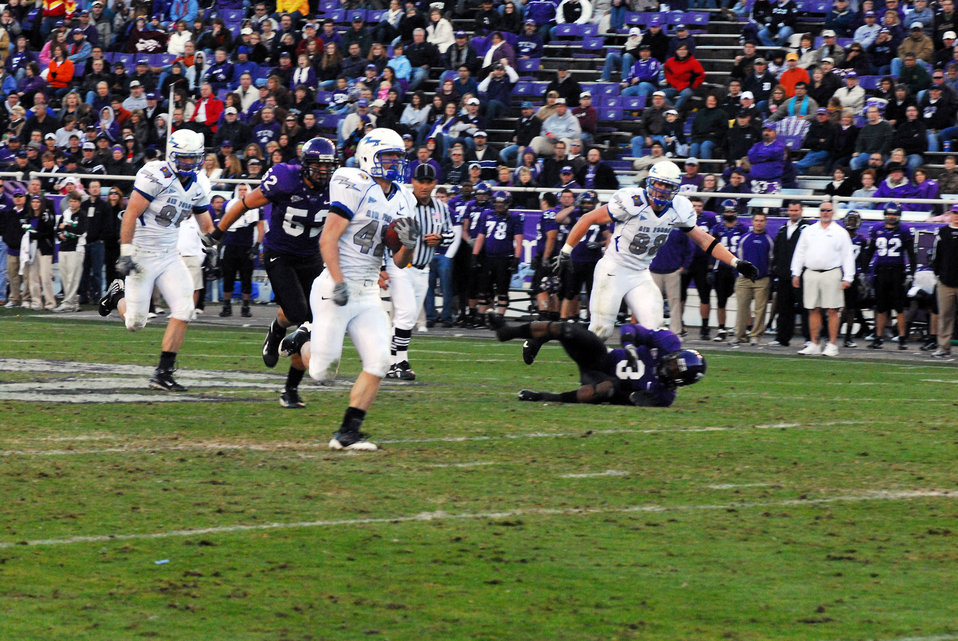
TCU thrashes Falcons

Air Force Academy fullback Jared Tew scampers for 57 yards to score the Falcon's only touchdown late in the fourth quarter against Texas Christian University in Amon G. Carter Stadium at Fort Worth, Texas. TCU beat the Falcons 44-10.